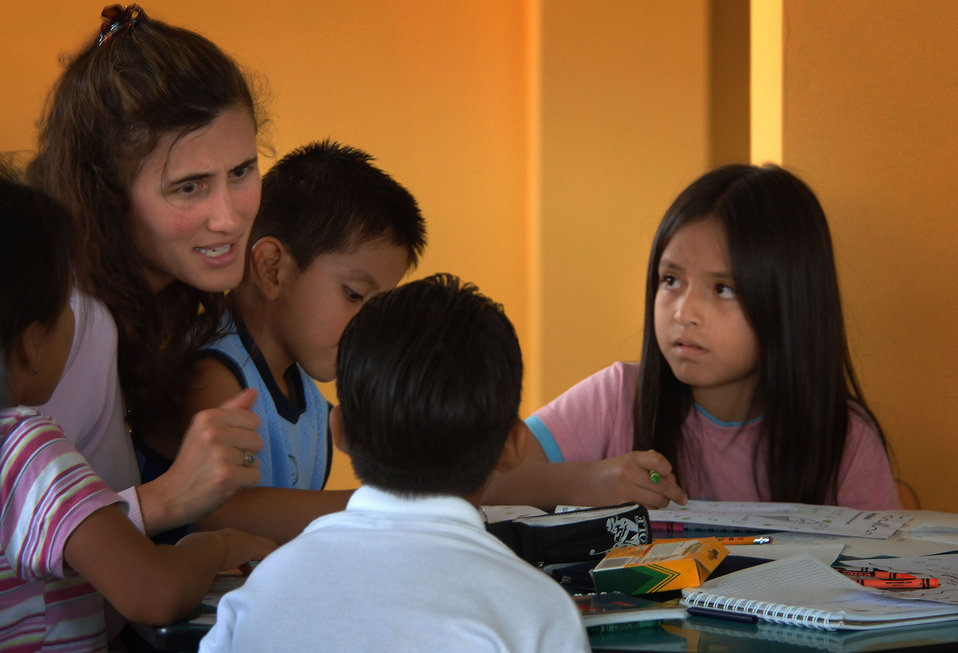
Airmen teach children English, show compassion

MANTA, Ecuador -- Capt. Sara Schwennesen teaches English to Ecuadorian children. She is a public affairs officer deployed to Quito, Ecuador.